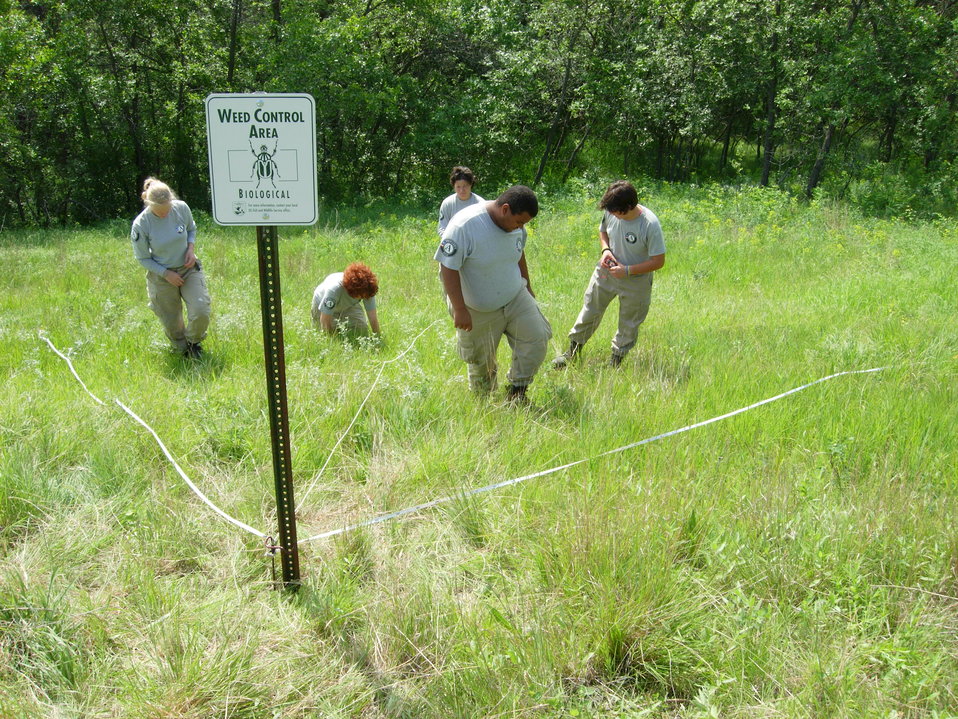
Team Oak 7 AmeriCorps Crew

Members of the AmeriCorps team conducting stem counts on Yellow Toadflax after release of biological control agent Stem Mining Weevil at Upper Souris National Wildlife Refuge.